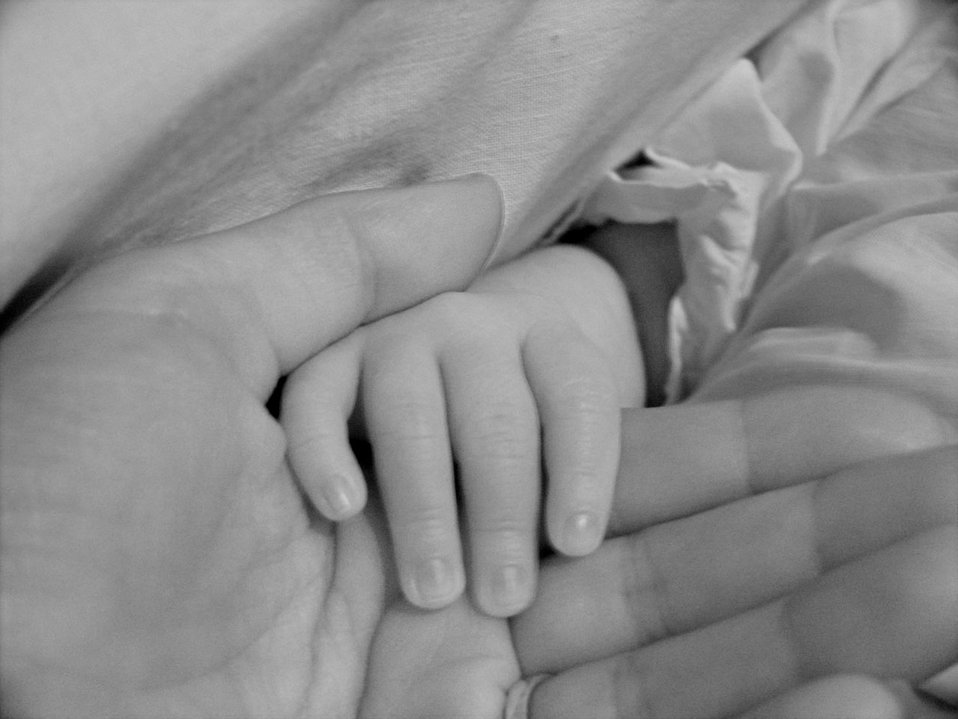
Mother and baby.